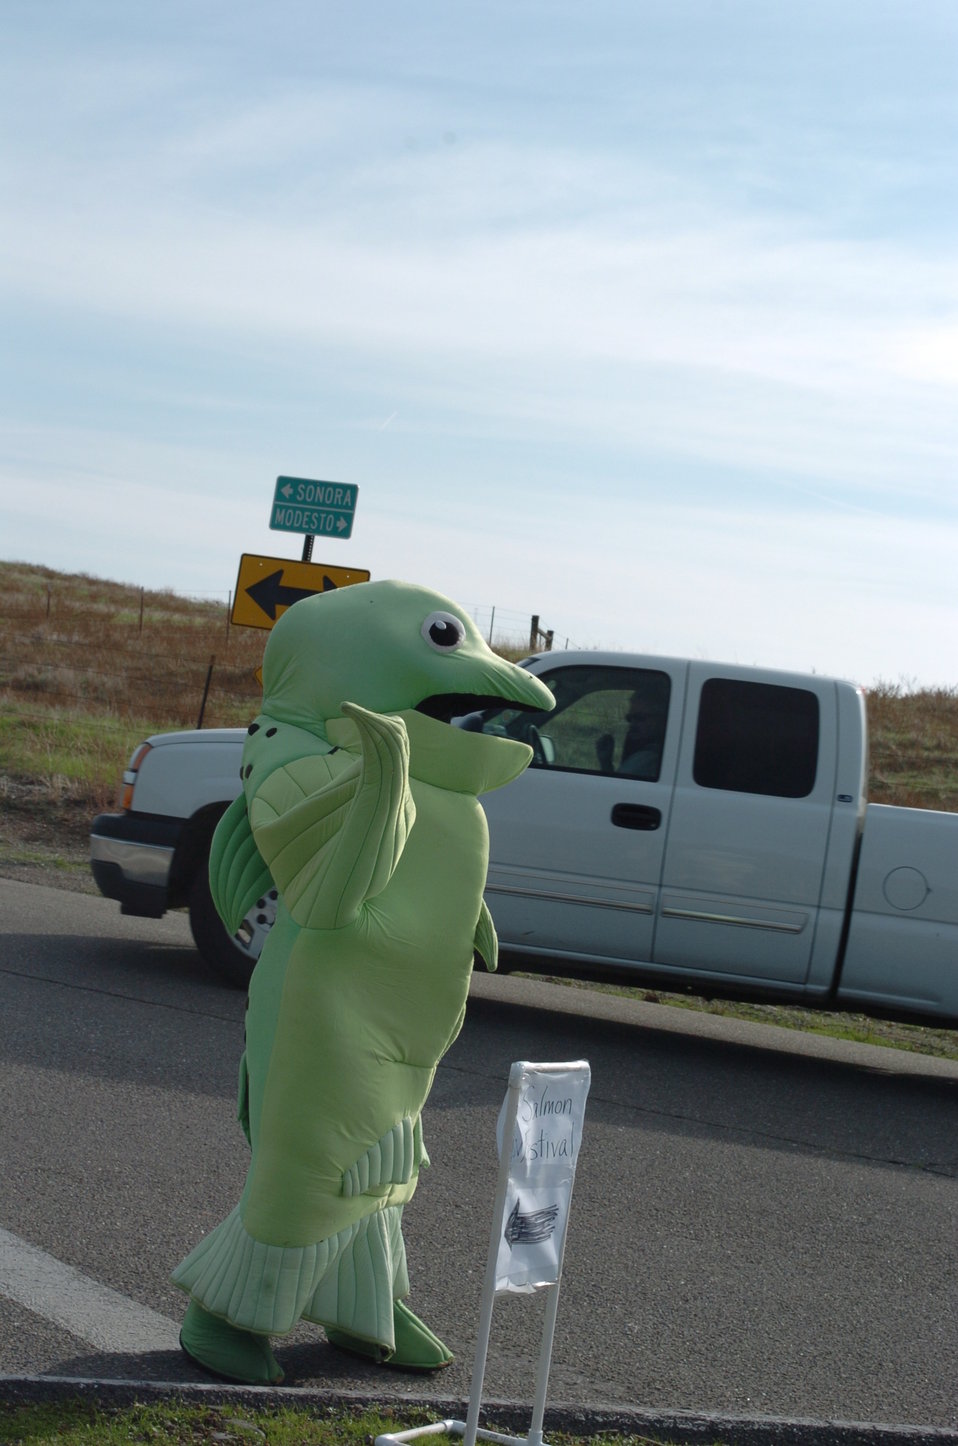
KNIGHT’S FERRY, Calif. (Nov. 16, 2010) – “Sammy the Salmon” points the way to the second annual Stanislaus River Salmon Festival at the U.S. Army Corps of Engineers Sacramento District’s Stanislaus River Parks here Nov. 14.
An estimated 3,000 people attended the free, family-friendly event, which was aimed at educating young people on the protection efforts for salmon and its habitat. More than 11,000 Chinook salmon returned to their spawning ground on the river during this year’s fall run, according to U.S. Fish and Wildlife Service habitat restoration coordinator J.D. Wikert, one of the festival coordinators.